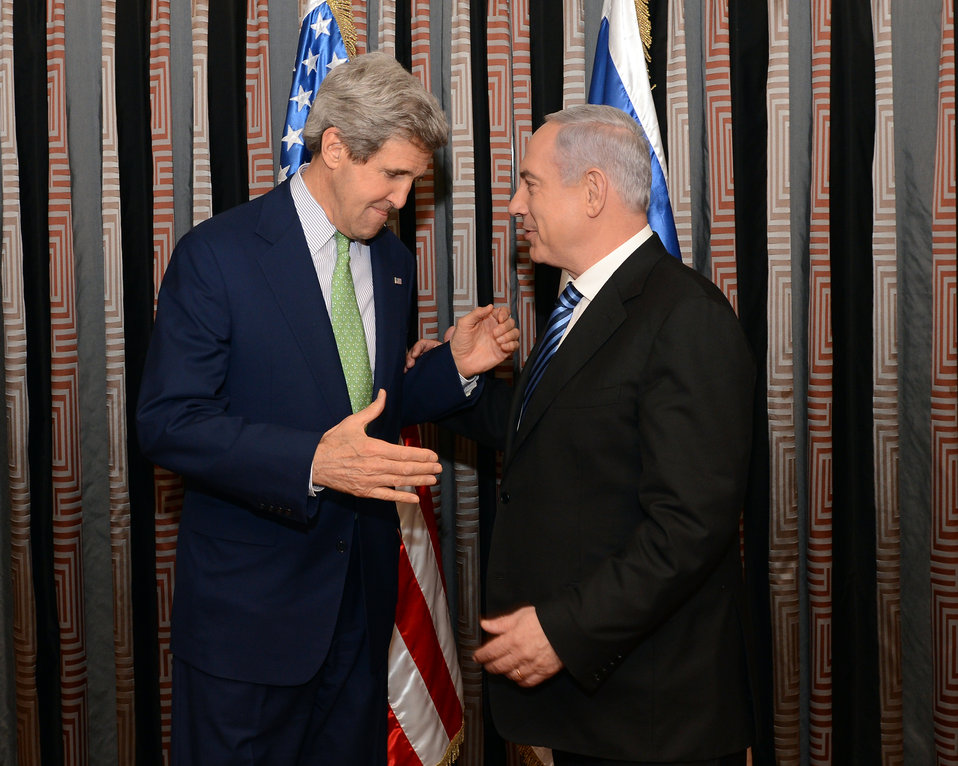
Secretary Kerry and Israeli Prime Minister Netanyahu Before Their Dinner

U.S. Secretary of State John Kerry and Israeli Prime Minister Benjamin Netanyahu before their working dinner in Jerusalem on March 23, 2013.